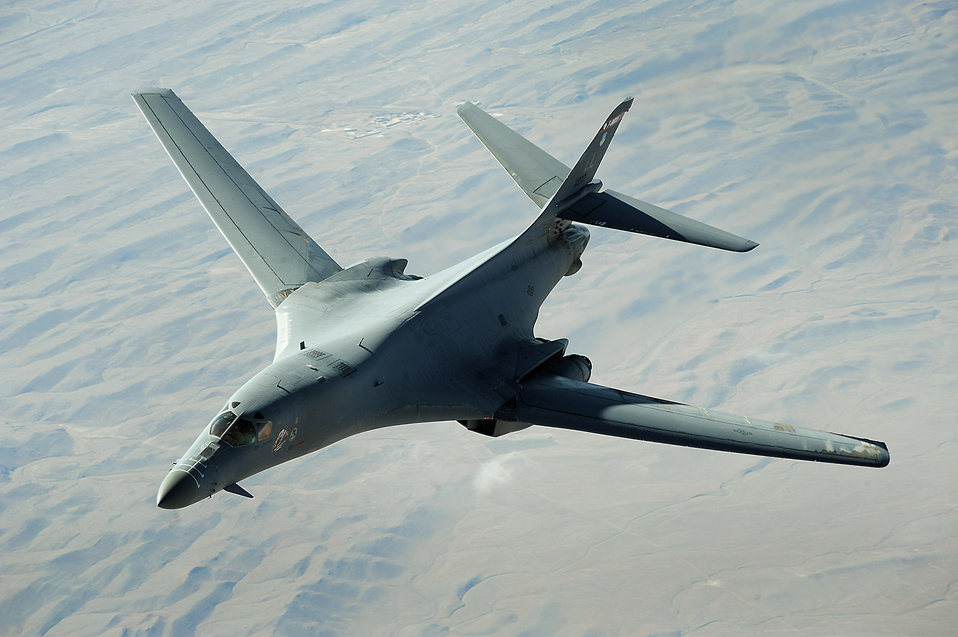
JTACs keep pilots on target to minimize collateral damage

The B-1B Lancer is one of the aircraft joint terminal attack controllers often request for close-air support.